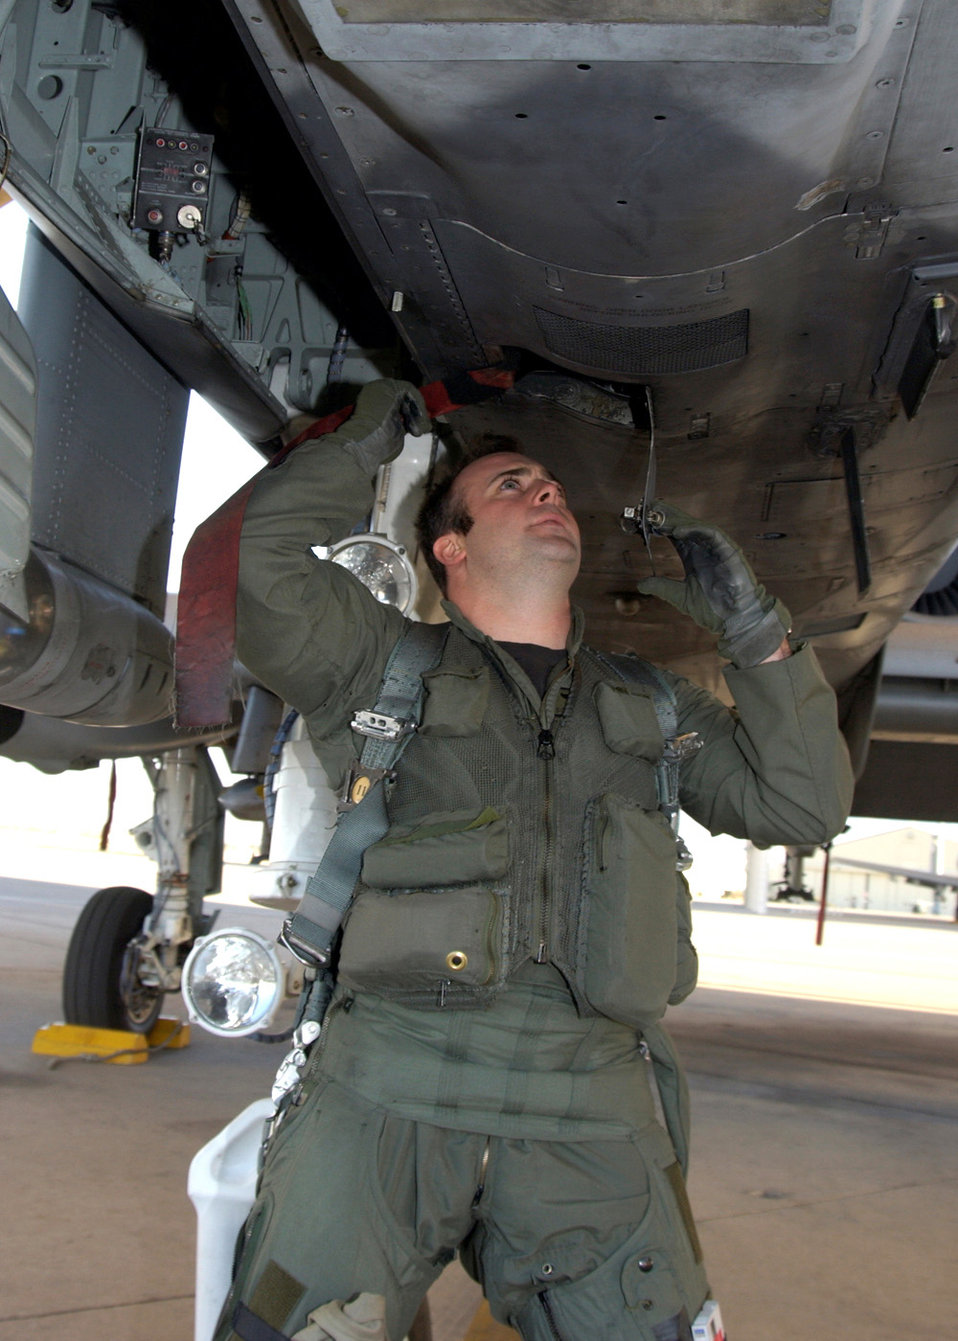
Preflight inspection

DAVIS-MONTHAN AIR FORCE BASE, Ariz. (AFPN) -- Capt. Scott Michalowski does a preflight inspection before takeoff. The 357th Fighter Squadron continuously trains for real world deployment situations. Captain Michalowski is a pilot with the 357th FS.